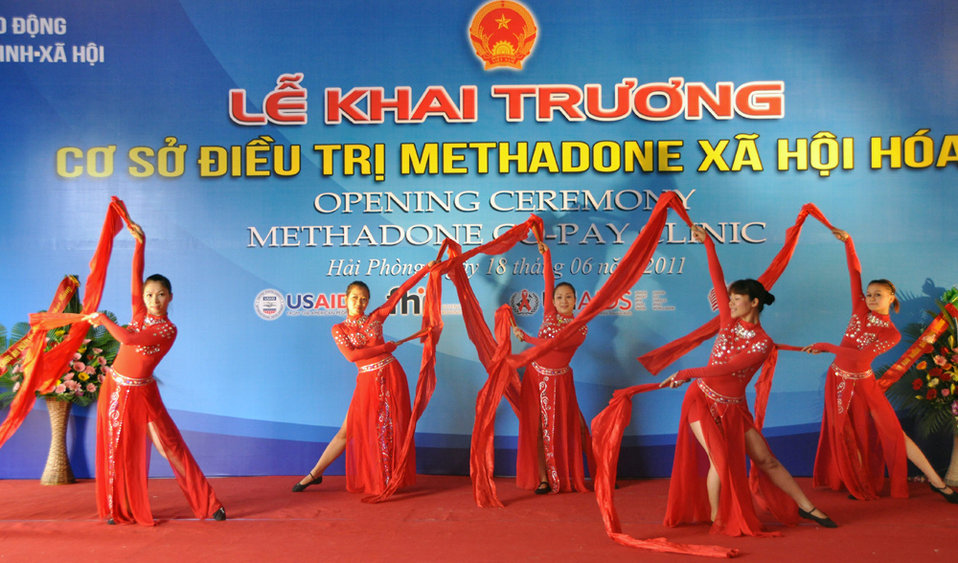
Co-pay Methadone Treatment Center Opens in Hai Phong on June 18, 2011